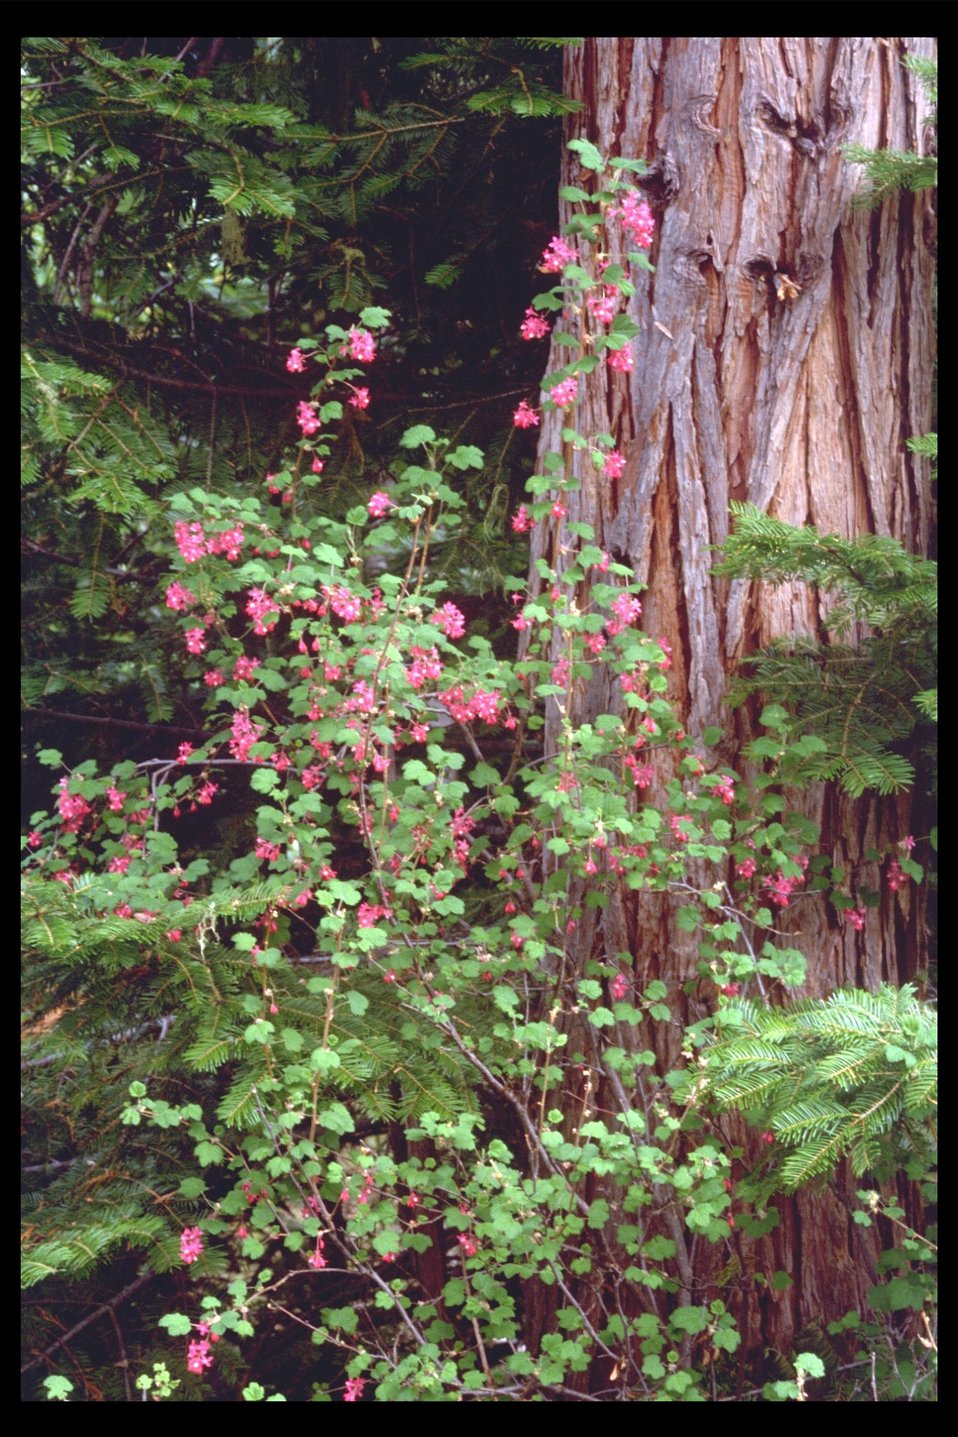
Red-flowering Currant (Ribes sanquineum) at Board Mountain along the West Fork Trail Creek Drainage.